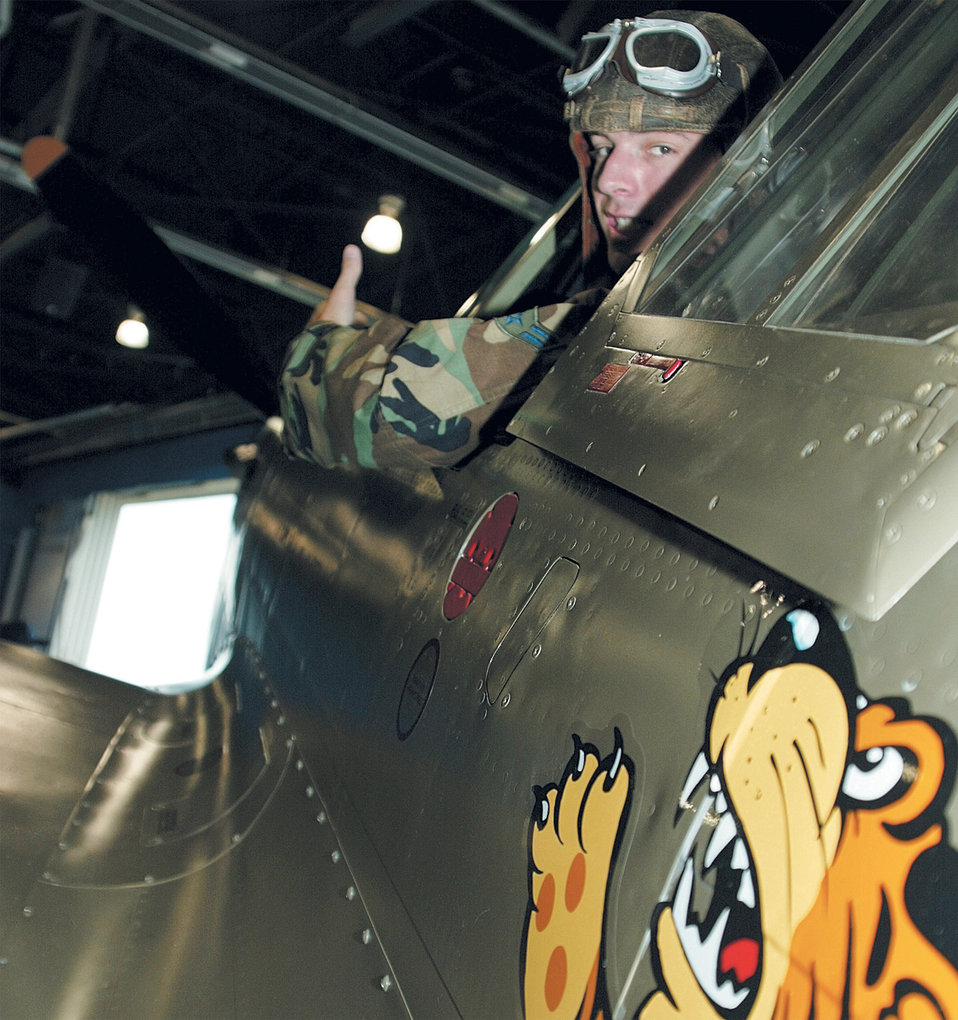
Tiger by the tale

LANGLEY AIR FORCE BASE, Va. -- Airman 1st Class John Purser sits in a vintage P-40 Warhawk in a hangar here during a Flying Tiger reunion June 1 to 6. The Flying Tigers were originally known as the American Volunteer Group that was recruited in 1941 to help China defeat Japan. The group's Chinese supporters referred to them as the Flying Tigers, and the Tigers evolved into the 23rd Fighter Group in 1942. Airman Purser is assigned to the 23rd Maintenance Squadron at Pope Air Force Base, N.C.